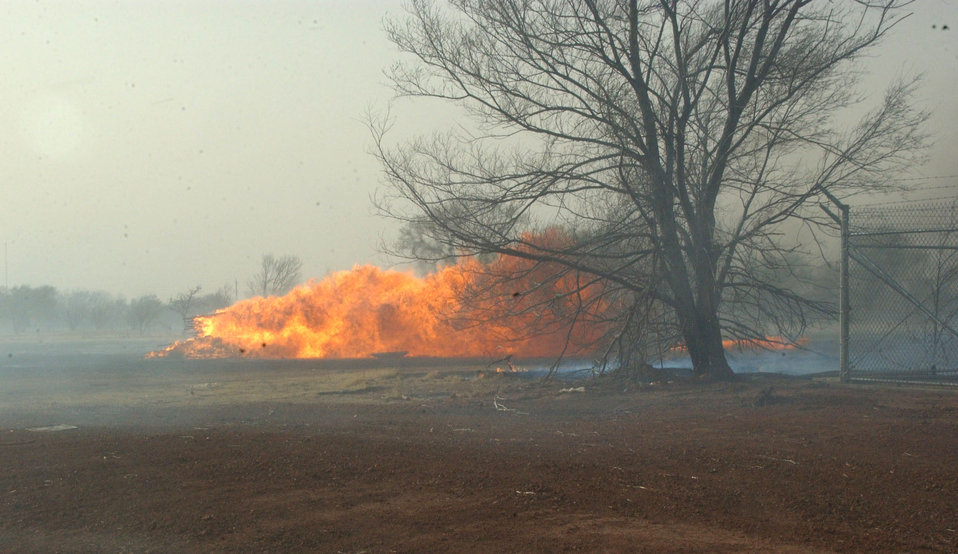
Altus fire

A fire burns outside the south entrance gate at Altus Air Force Base, Okla., Sunday, March 12. The fire eventually made its way on base. No injuries were reported.